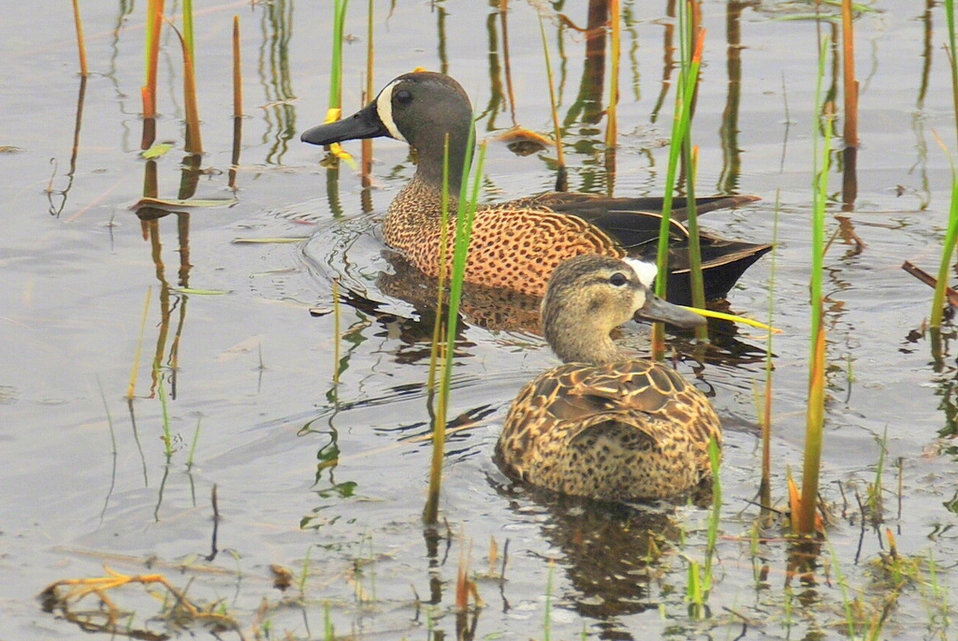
Sand Lake National Wildlife Refuge, SD

Blue winged teal pair